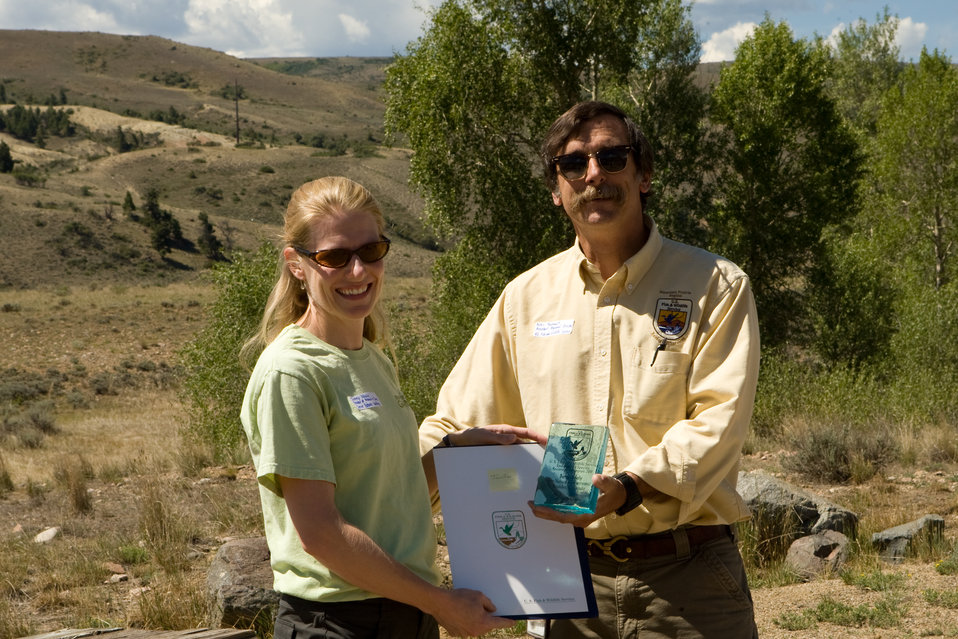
Colorado Rare Plant Conservation Initiative

The Colorado Rare Plant Conservation Initiative (RPCI) is a partnership of 23 statewide and regional agencies, private organizations, and academic institutions working to conserve 121 rare plants in Colorado. As part of these efforts the group developed the Colorado Rare Plant Conservation Strategy, developed Best Management Practices to reduce energy development impacts, addressed climate change, and developed focused strategies for the conservation of individual species at eight priority landscapes. The group has also worked to coordinate volunteer efforts for plant conservation across the state.